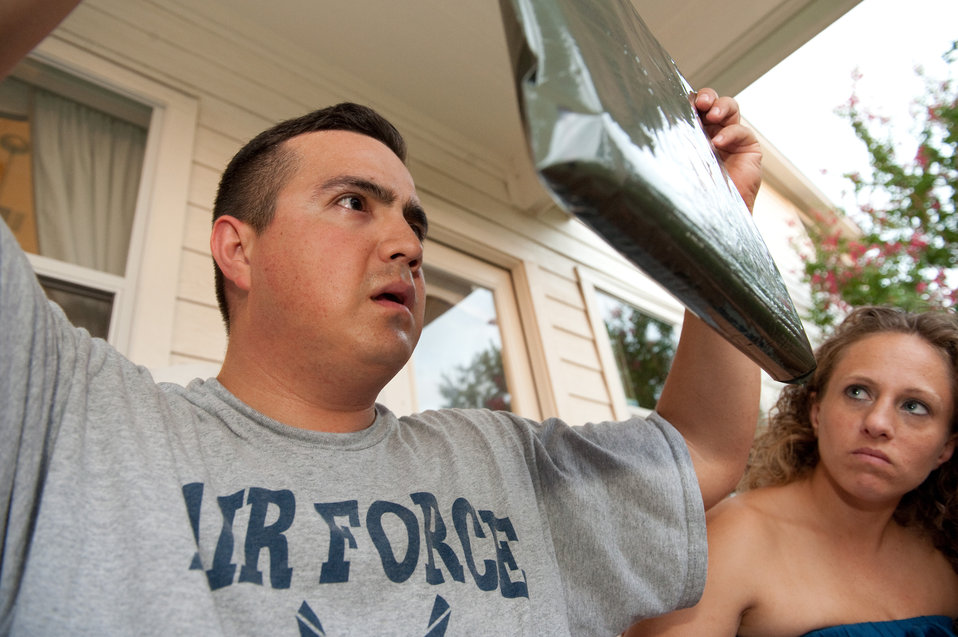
Blogging Couple Deployment preperation

Tech. Sgt. Christina Gamez (right) looks on and learns from her husband Master Sgt. Rudy Gamez as he double checks the instructions printed on a bag from a permethrin insect repellent kit bag at his home in San Antonio, Texas, on July 13, 2010. The bag will be used to soak the blouse or pants of a uniform set, in a repellent and water emulsion, providing some protection for many washings. He is preparing for Combat Skills Training and his sixth deployment to Southwest Asia, and Tech. Sgt Gamez will be on her first deployment. Later this year he and his wife Tech. Sgt Christina Gamez will both be blogging about their deployment experiences.